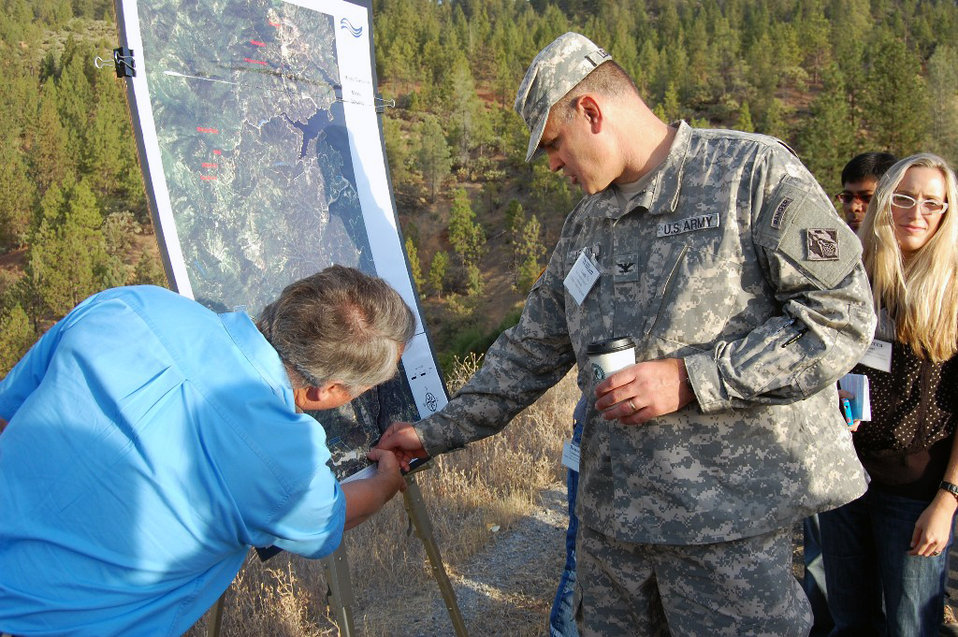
Northern California water education tour

U.S. Army Corps of Engineers Sacramento District commander Col. Bill Leady visits Spring Creek Debris Dam and the Iron Mountain Mine treatment plant in Shasta, Calif., during the Water Education Foundation’s Northern California Tour Oct. 17, 2012. Leady and other speakers discussed innovative programs for flood management, groundwater management and salmon restoration while visiting Oroville and Shasta dams, Red Bluff Diversion Dam, the Feather River Fish Hatchery, Clear Creek Restoration Project and Glenn-Colusa Irrigation District’s fish screen and Delevan Wildlife Refuge.